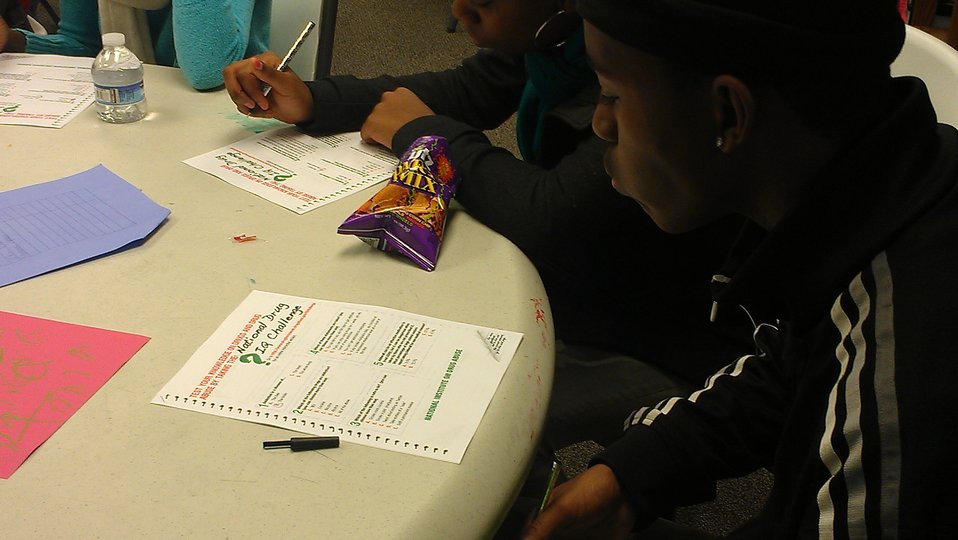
Washington, D.C. Youth, NDFW 2013

Sasha Bruce Youthwork, Inc. sponsor 2013 NDFW events for youth in Prevention Centers in Wards 5 & 6, Washington, D.C.